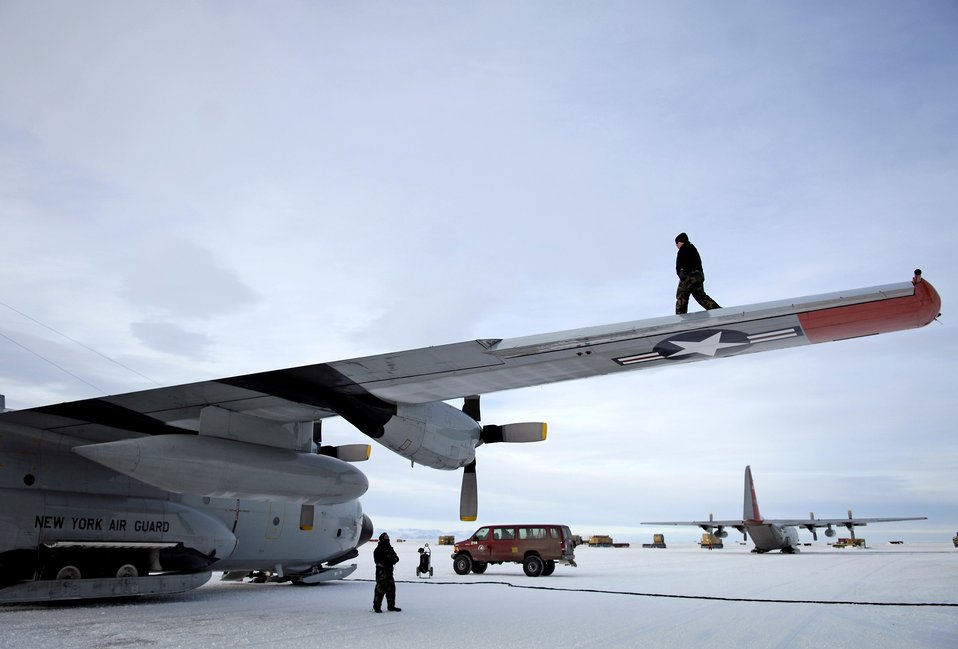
Operation Deep Freeze main season underway

Maintenance crew conduct a post flight check of an LC-130 Hercules Nov. 27 on the ice runway near McMurdo Station, Antarctica, during Operation Deep Freeze. Ski-equipped LC-130s, crews and support personnel from the New York Air National Guard's 109th Airlift Wing are supporting the 13th Air Force-led Joint Task Force Support Forces Antarctica, Operation Deep Freeze.